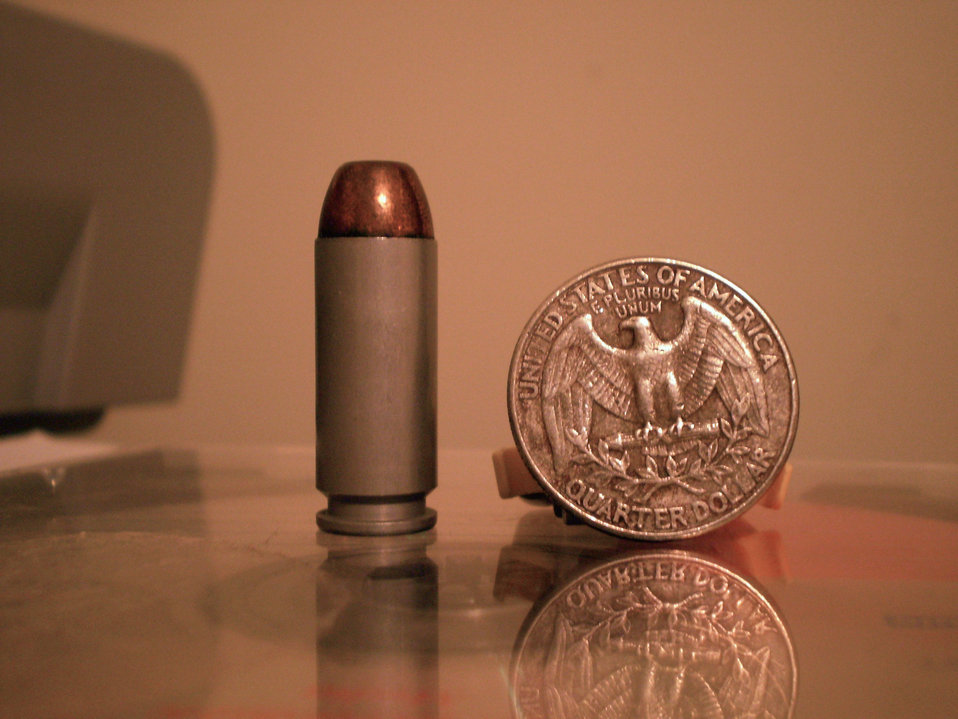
I took this photo myself.